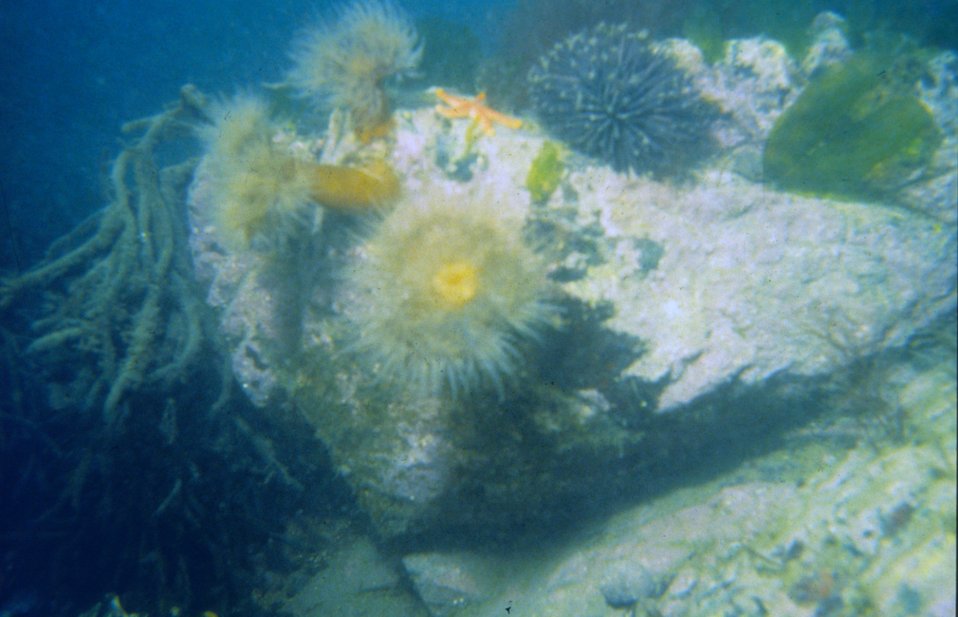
A collection of anenomes and star fish.